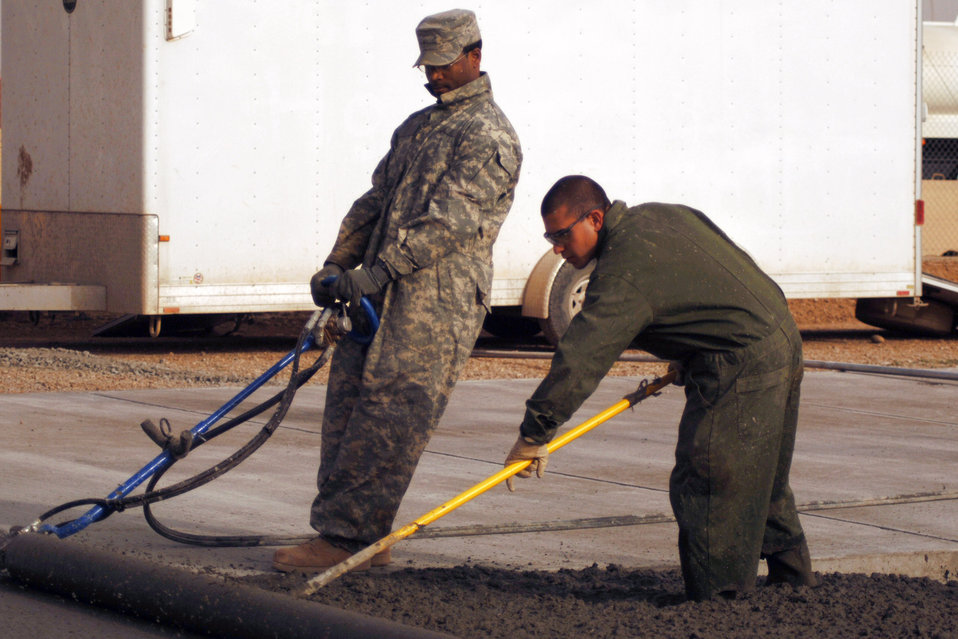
Set in stone

Staff Sgts. Dedrick Elder and Alexander Perez complete the last portion of a 76-meter concrete pad Feb. 15 during a construction project at Joint Base Balad, Iraq. The NCOs are pavement and construction equipment operators with the 332nd Expeditionary Civil Engineer Squadron. Sergeant Elder, a native of Knoxville, Tenn., is deployed from Little Rock Air Force Base, Ark., and Sergeant Perez, from Miami, is deployed from Eglin AFB, Fla.